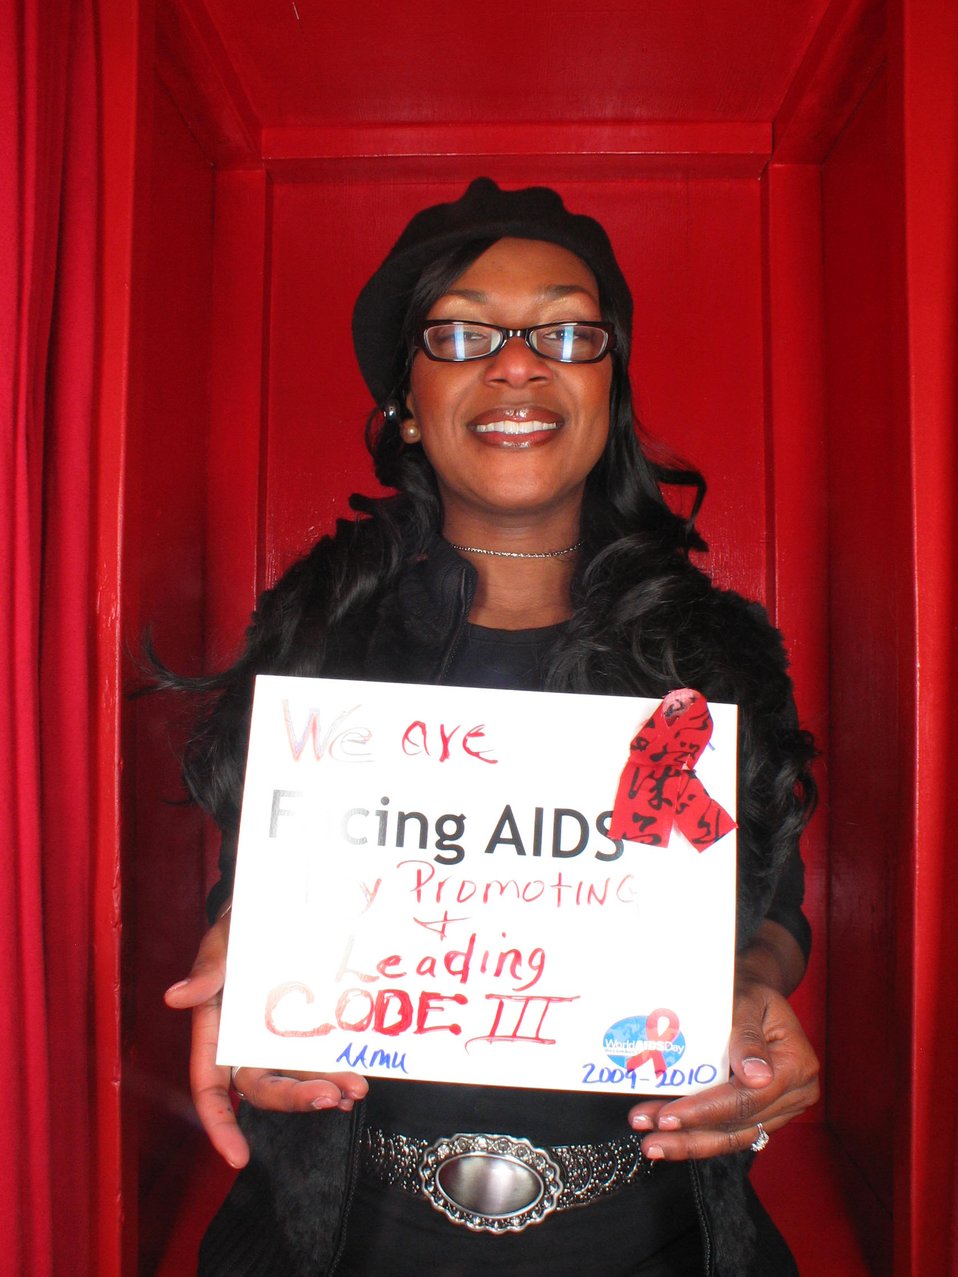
We are Facing AIDS by promoting and reading CODE III